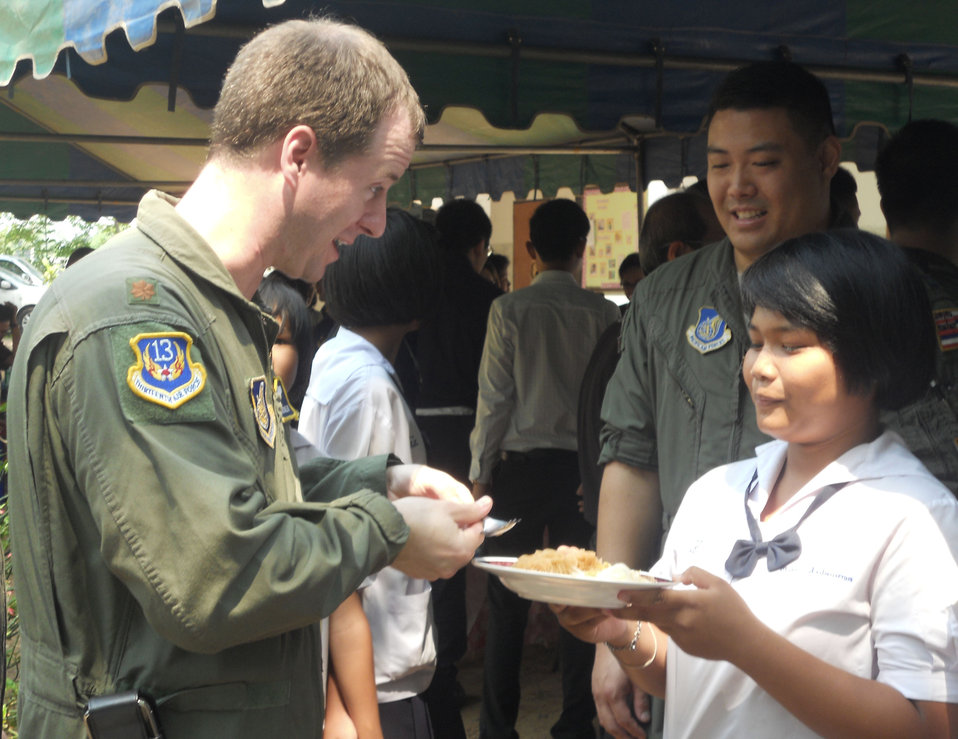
Cope Tiger 2011

Maj. Greg Richert is served noodles March 14, 2011, by a student from Ang Huay Yang School in Korat, Thailand. Airmen visited the school with members of the Royal Thai and Republic of Singapore air forces during Cope Tiger 2011, an annual, multilateral, joint field training exercise being conducted in Thailand March 14 through 25. Major Richert is the chief of aerospace medicine at 13th Air Force, Joint Base Pearl Harbor-Hickam, Hawaii, and the medical lead for Exercise Cope Tiger 2011.